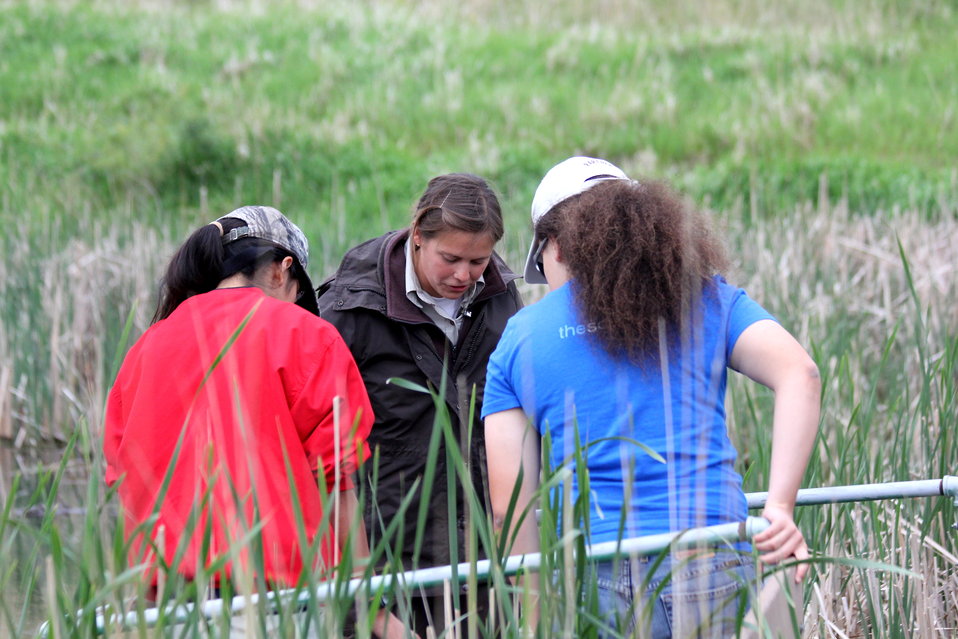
CDIP 2012 Fergus Falls

Managing wetlands at Fergus Falls